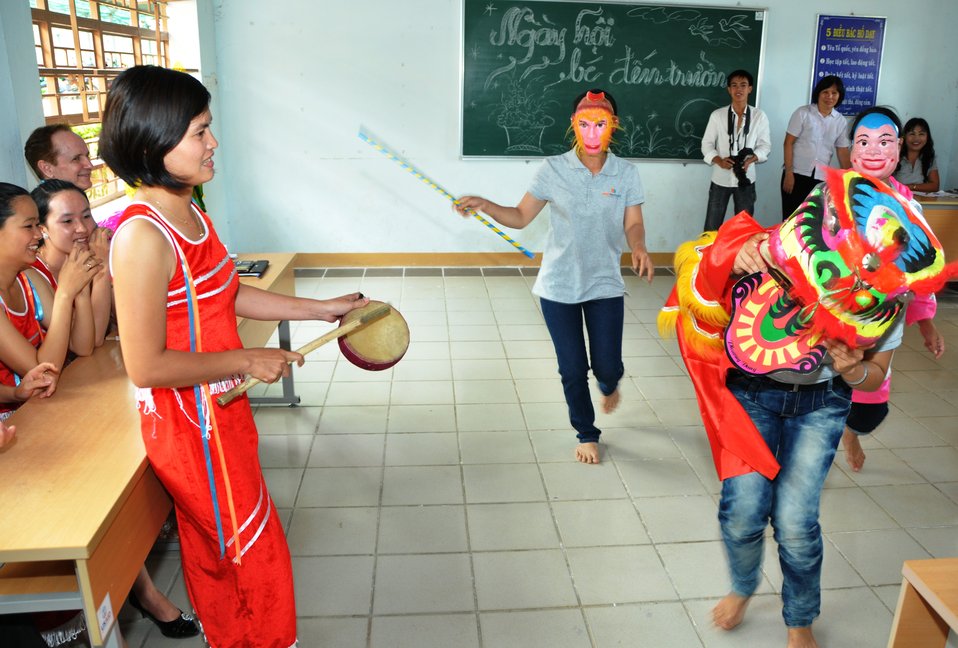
USAID and EMW support teacher training for young ethnic minority children in Kon Tum, Vietnam